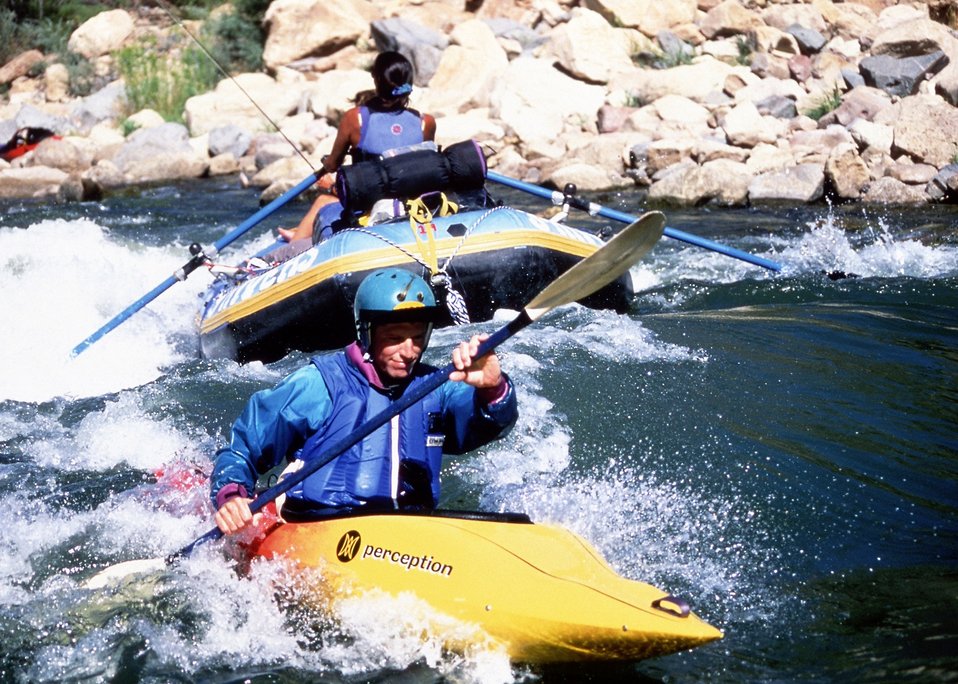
Kayakers in White Water